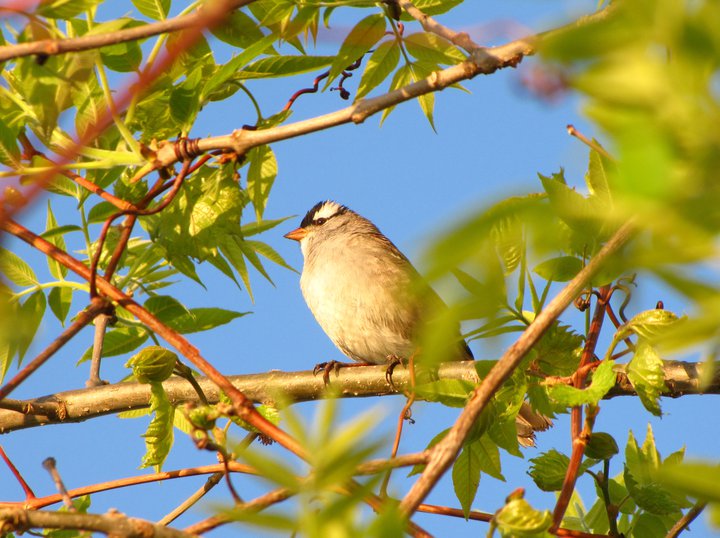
white-crowned sparrow

Port Louisa National Wildlife Refuge